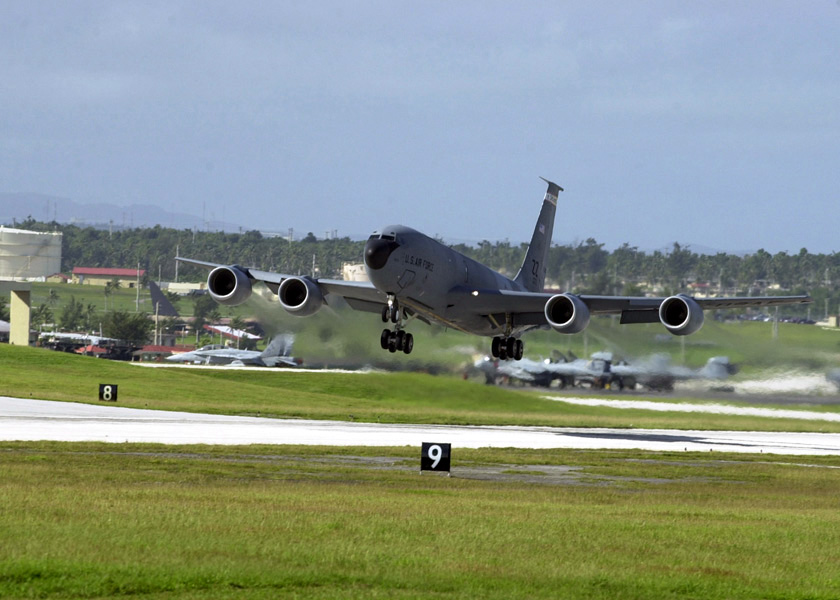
'Cope-ing' with an exercise

ANDERSEN AIR FORCE BASE, Guam -- A KC-135 Stratotanker takes off from the flightline here Nov. 12 during exercise Cope North. The exercise involves airmen, sailors and Marines plus Japanese air self-defense force troops. The aircraft is from the 909th Air Refueling Squadron at Kadena Air Base, Japan.